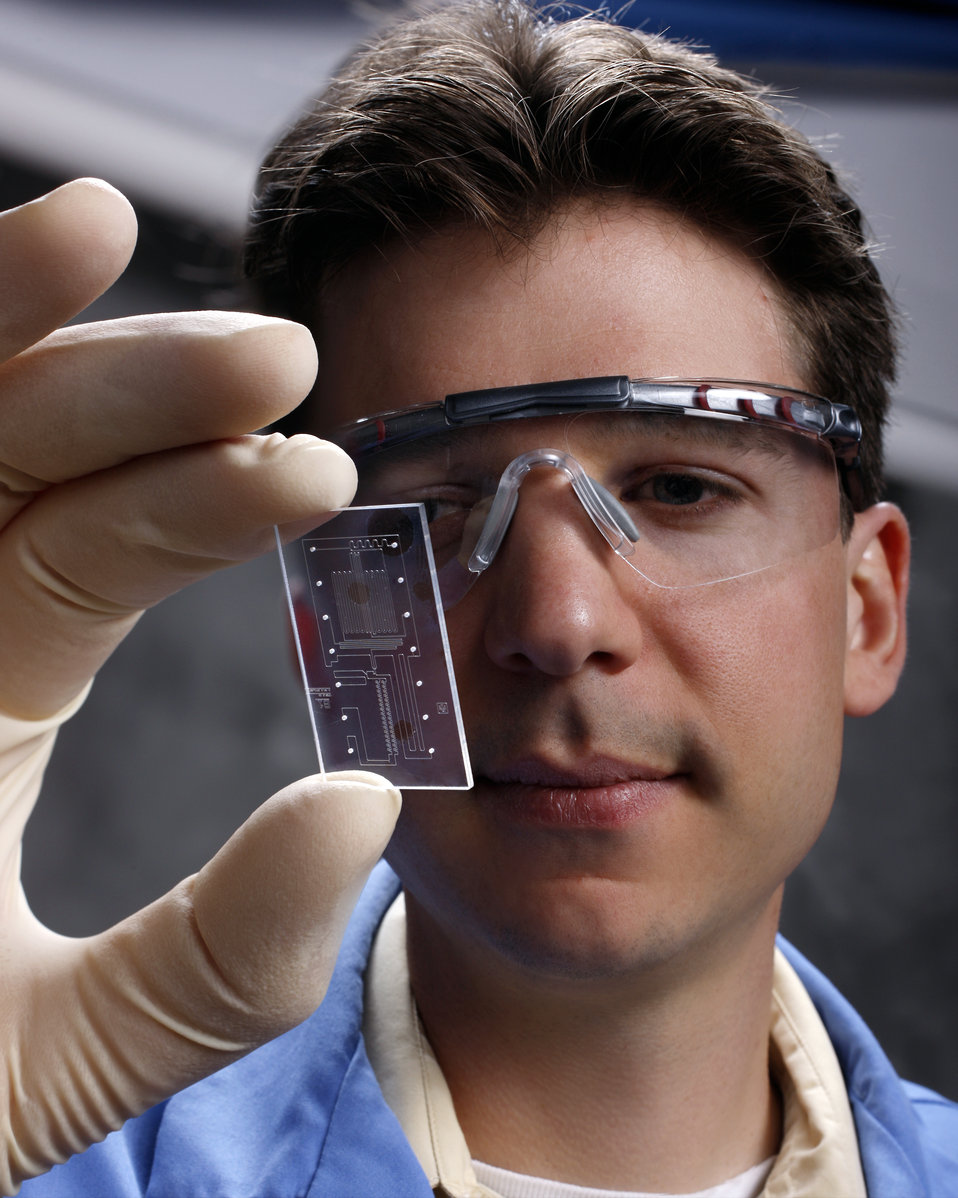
Sandia researcher Thomas Perroud examines a microscale immune and cell analysis (MICA) chip.

The MICA platform is an extremely versatile tool that can facilitate study of a wide variety of cellular processes. It has consistently demonstrated its value in initial applications at Sandia, which have focused on clarification of immune cell responses to potentially deadly microbial pathogens. MICA enables researchers to precisely target, sort, and measure samples as small as a single cell in an automated system that includes flow cytometry.